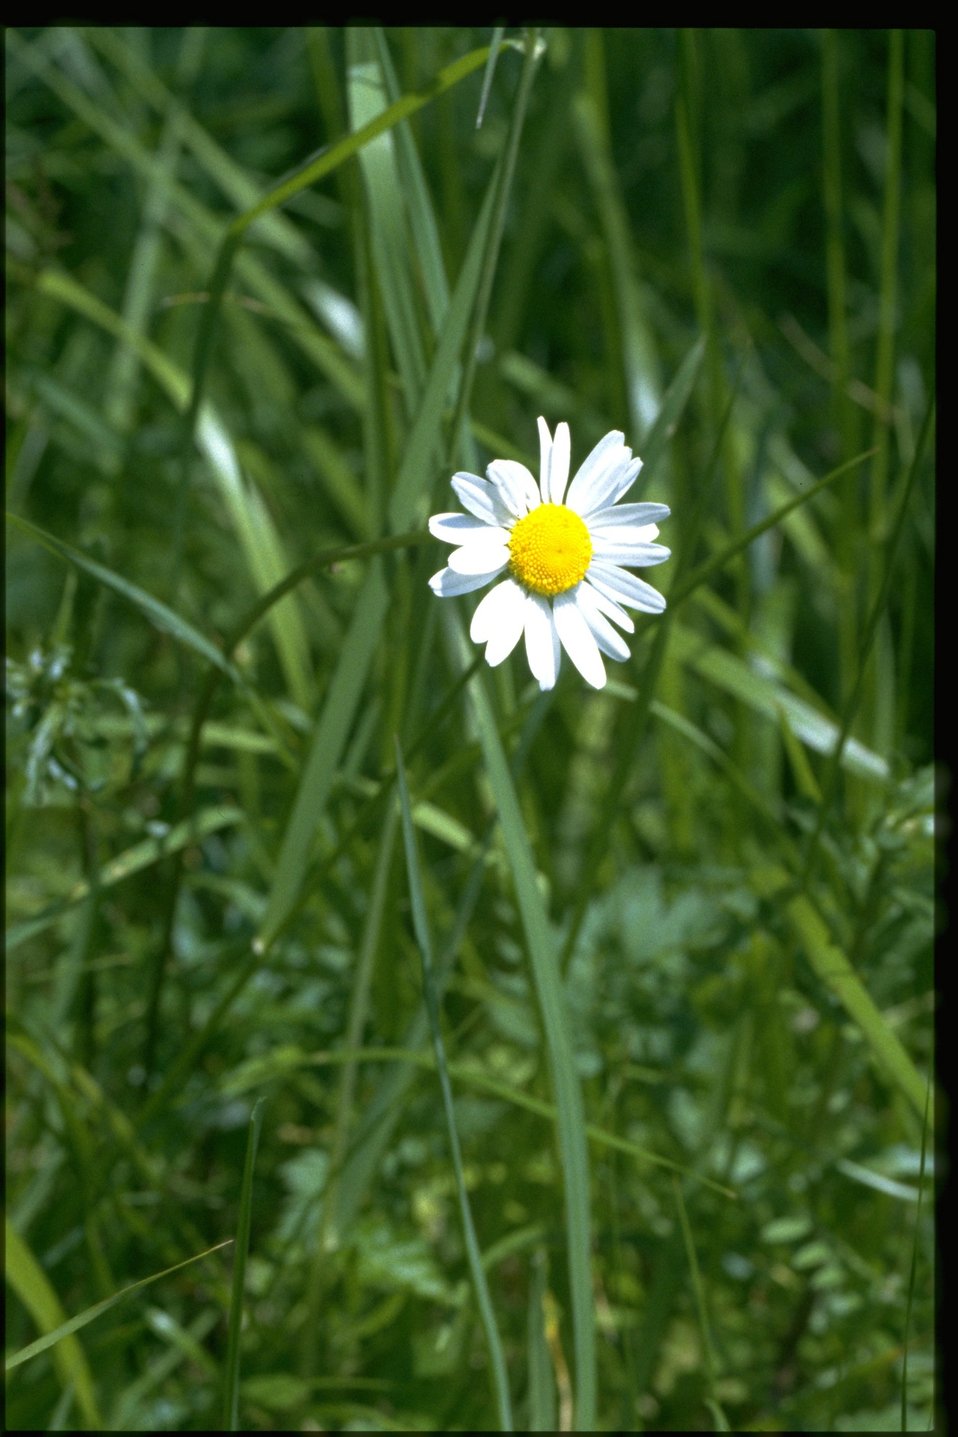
Medium shot of Asteraceae.